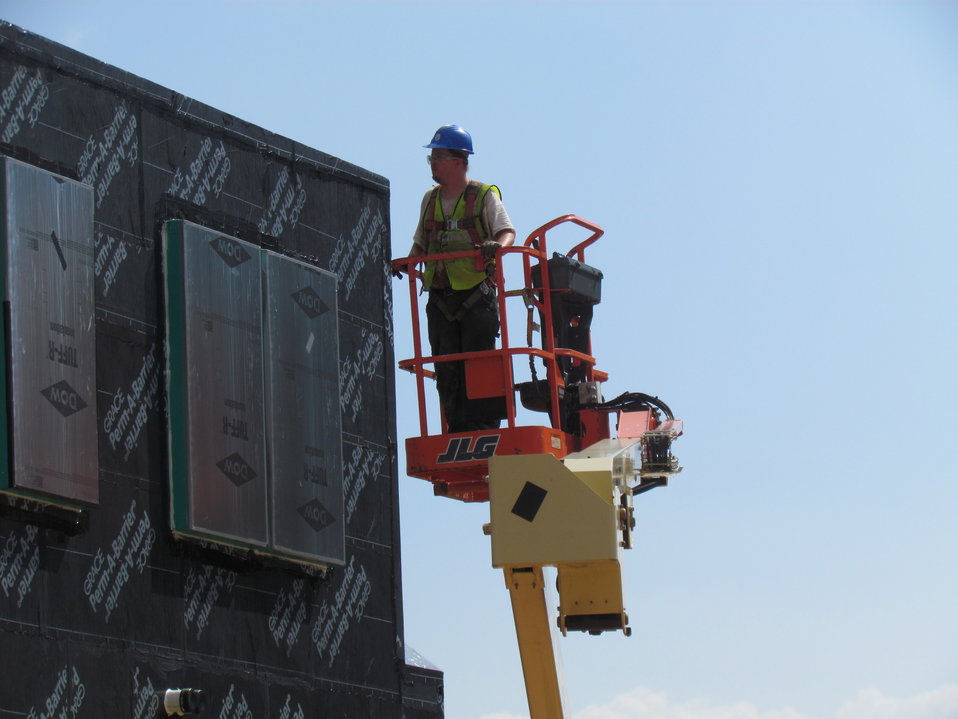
Net-Zero Energy Residential Test Facility - Workmen inspecting window openings to ensure they are sealed prior to conducting air leakage tests.